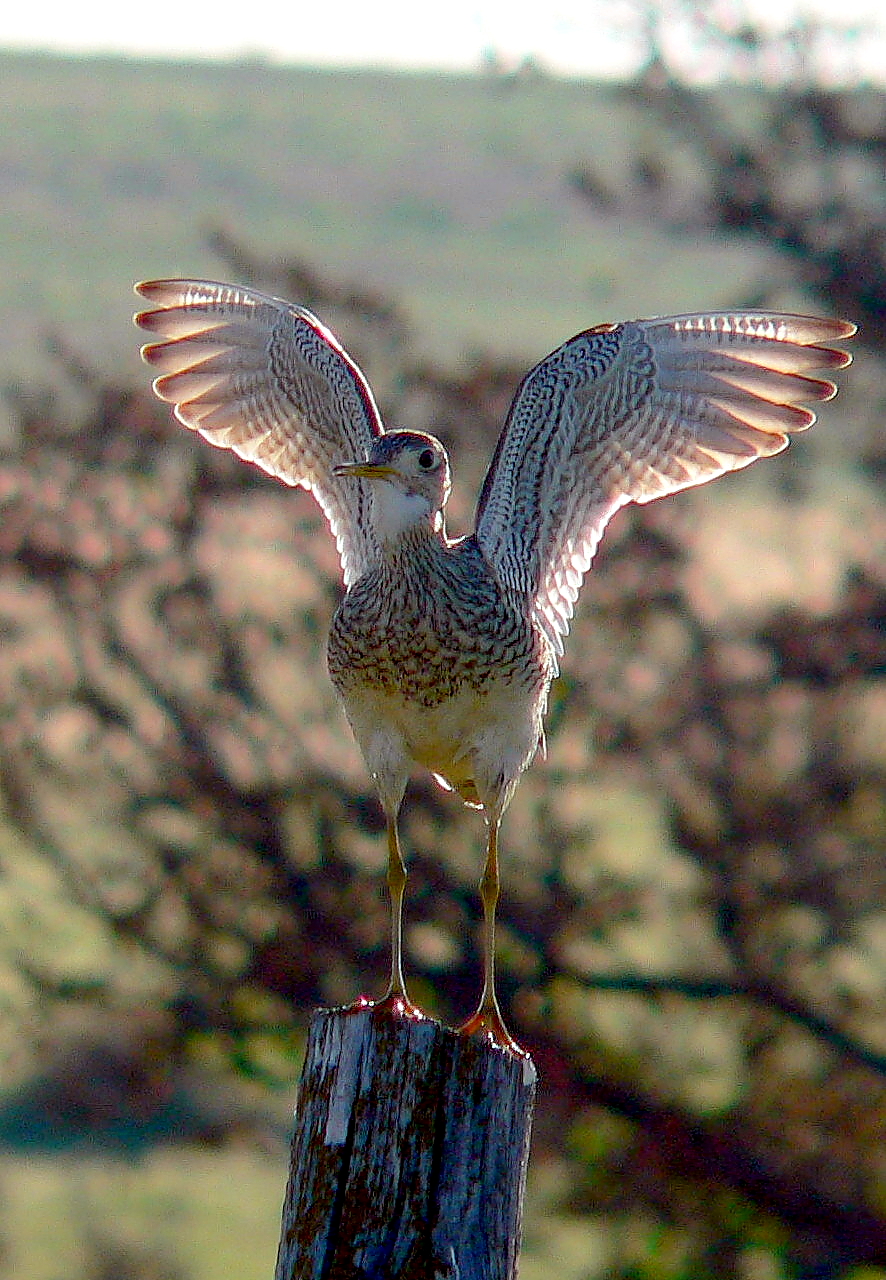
Shorebird of the prairie

Returning from its Pampas prairie wintering grounds in Argentina, the upland sandpiper (Bartramia longicauda) takes advantage of the nesting and feeding habitat that Kirwin NWR and adjacent private land prairie has to offer. A regular seasonal resident to this refuge in northcentral Kansas, the upland sandpiper will perch on fenceposts. After flying to the perch, it will hold it's wings briefly above its body in a motion that looks like a stretch.

Credit: Tony Ifland / USFWS

Photo Contest Entry #36